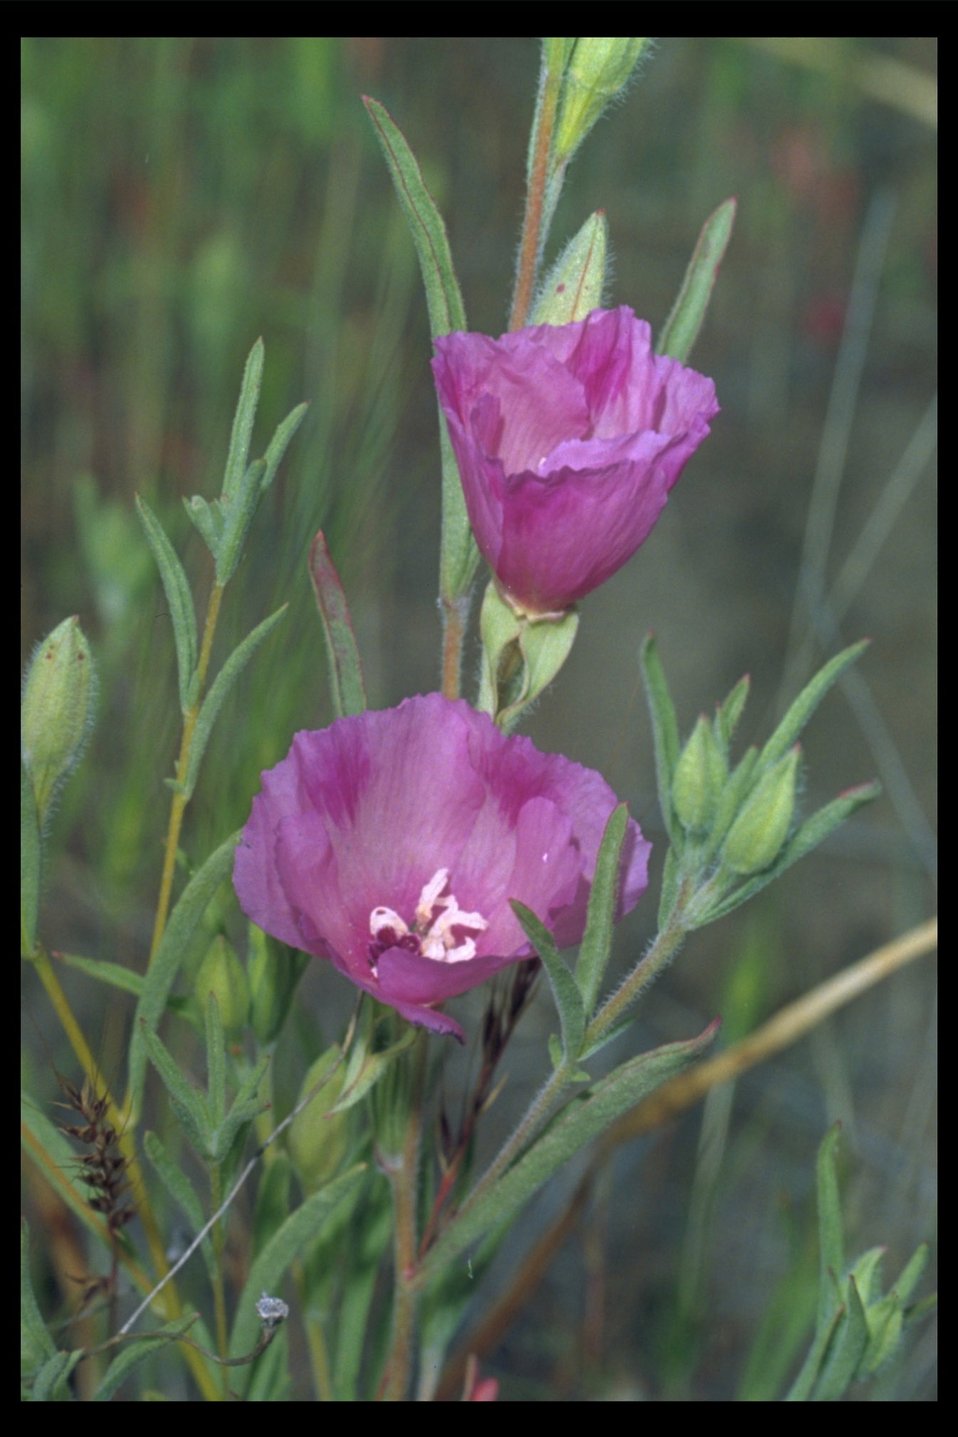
Farewell to Spring (Clarkia amoena) at Upper Table Rock.